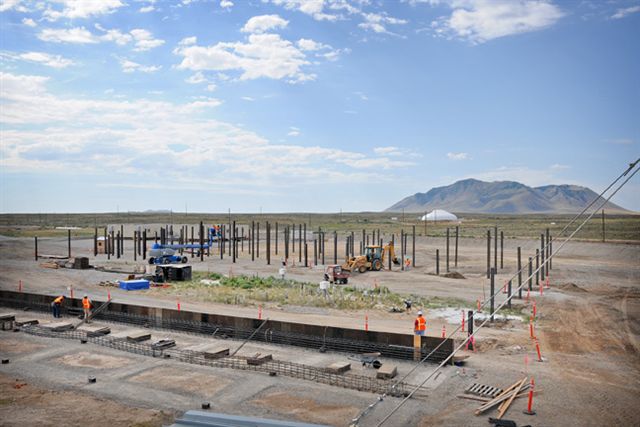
RAN ARP RWMC S127 ARPVII PILINGS 072610 P6558-069 A